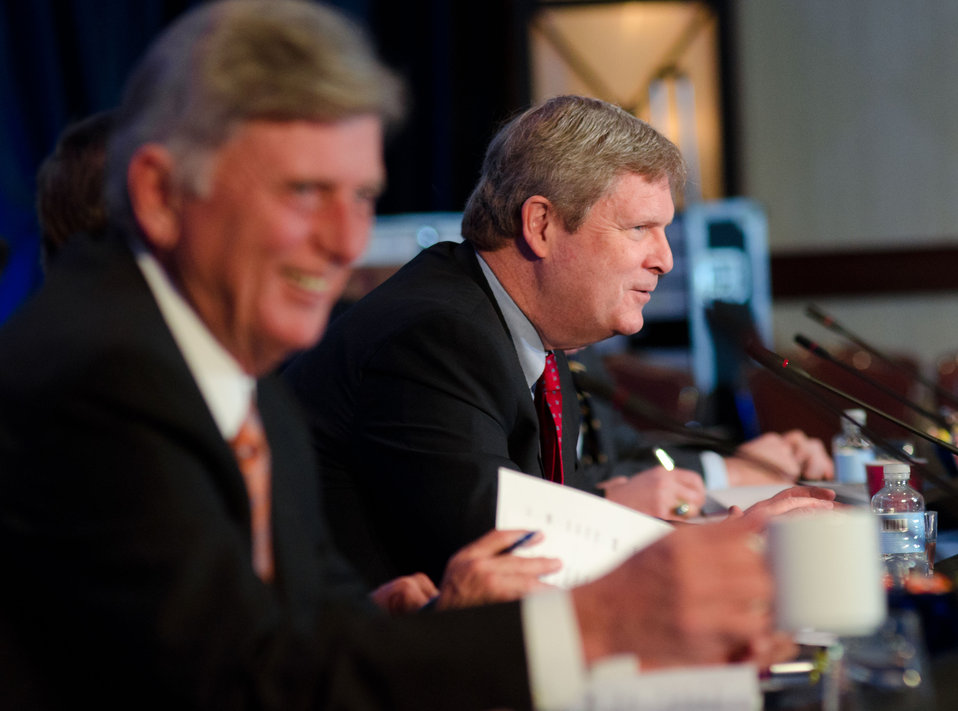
Agriculture Secretary Tom Vilsack (right) responds to a comment from Arkansas - Governor Mike Beebe (left) during the National Governors Association Education, Early Childhood and Workforce Committee meeting in Washington, D.C., on Sunday, February 26, 2012.